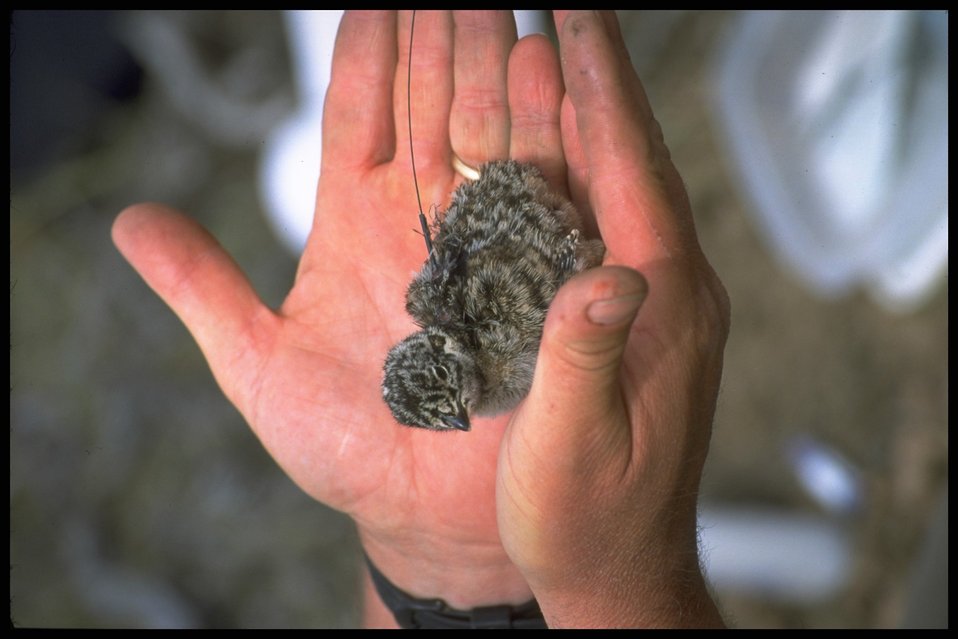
Sage Hen Grouse, Lakeview District.